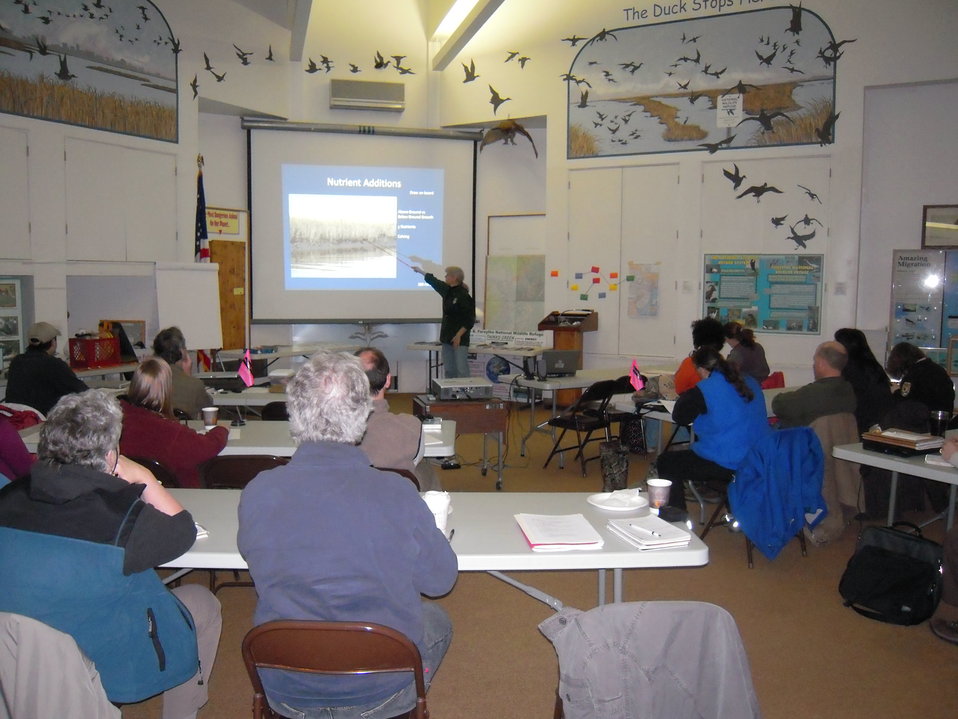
Salt Marsh workshop

Susan Adamowcz presents a topic at the Salt Marsh workshop.